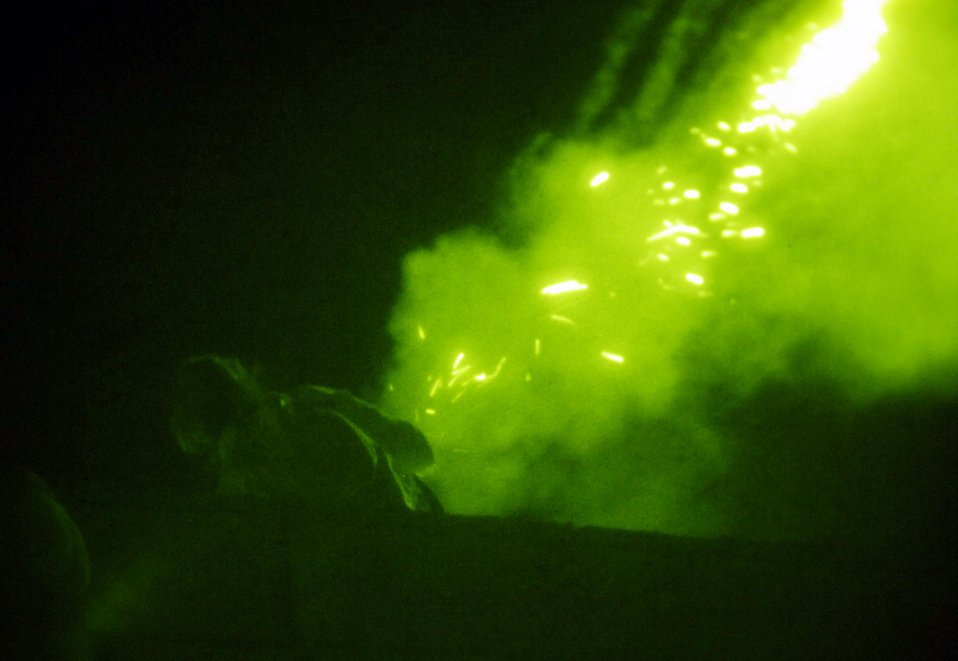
Warfighters gather to train for close-air-support operations

An Air Force member portraying an enemy sniper launches flares during a night engagement to simulate heavy machine gun fire as part of exercise Atlantic Strike VI Nov. 6 at Avon Park, Fla. Atlantic Strike VI is a semi-annual training event sponsored by U.S. Central Command Air Forces at the Avon Park Air Ground Training Complex. The training scenarios are aimed at preparing joint terminal attack controllers and Army joint fires observers for urban close-air-support operations prior to deployment to Iraq and Afghanistan.